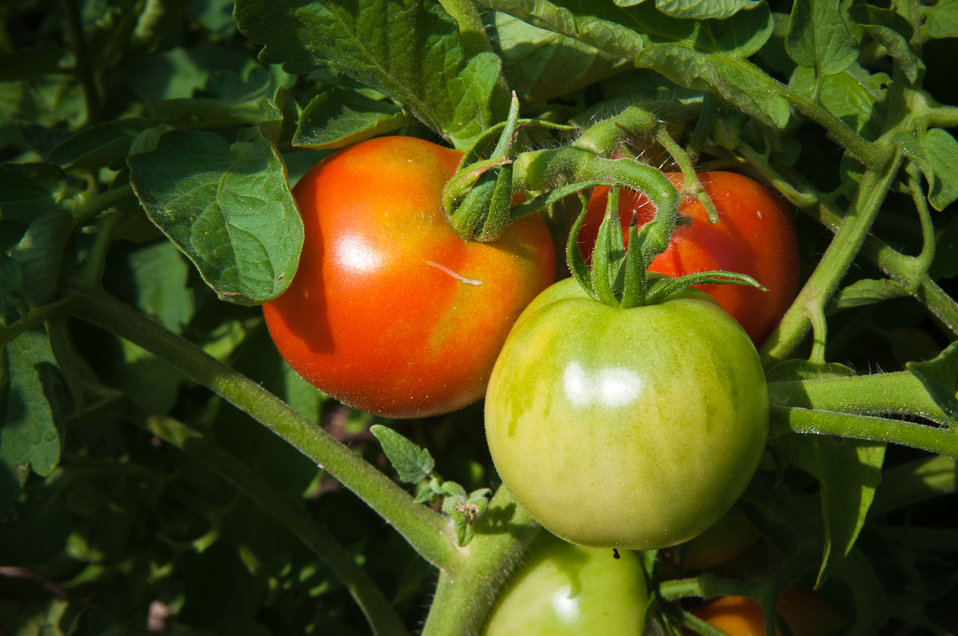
Lincoln tomatoes grown in the United States Department of Agriculture People's Garden in Washington, D.C. Tuesday, September 4, 2012. The Lincoln tomato is an heirloom variety introduced in 1923 in honor of President Abraham Lincoln. President Lincoln established the United States Department of Agriculture 150 years ago and named it, “The People’s Department” because of the impact this Department has on everyday American Lives. The USDA People’s Garden Initiative establishes community and school gardens across the nation to unite neighborhoods in a common effort and inspire simple solutions to challenges facing our country-from hunger to the environment. Get involved in growing a People’s Garden at www.usda.gov/peoplesgarden.